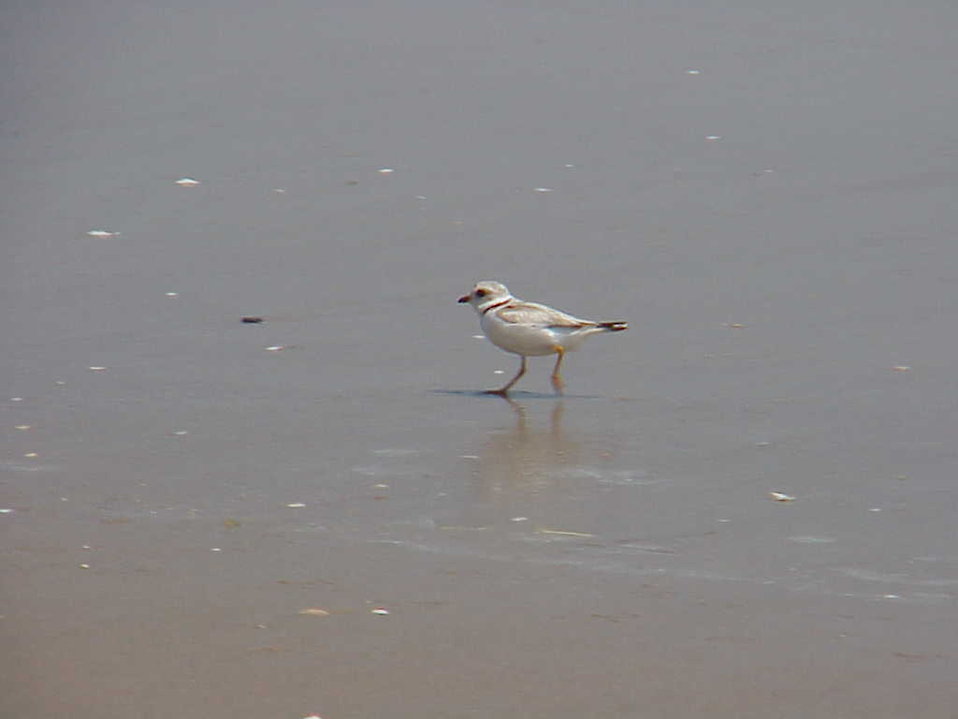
Piping plover at Back Bay National Wildlife Refuge in Virginia.